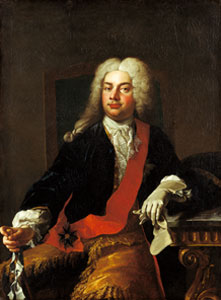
Gotter 1732